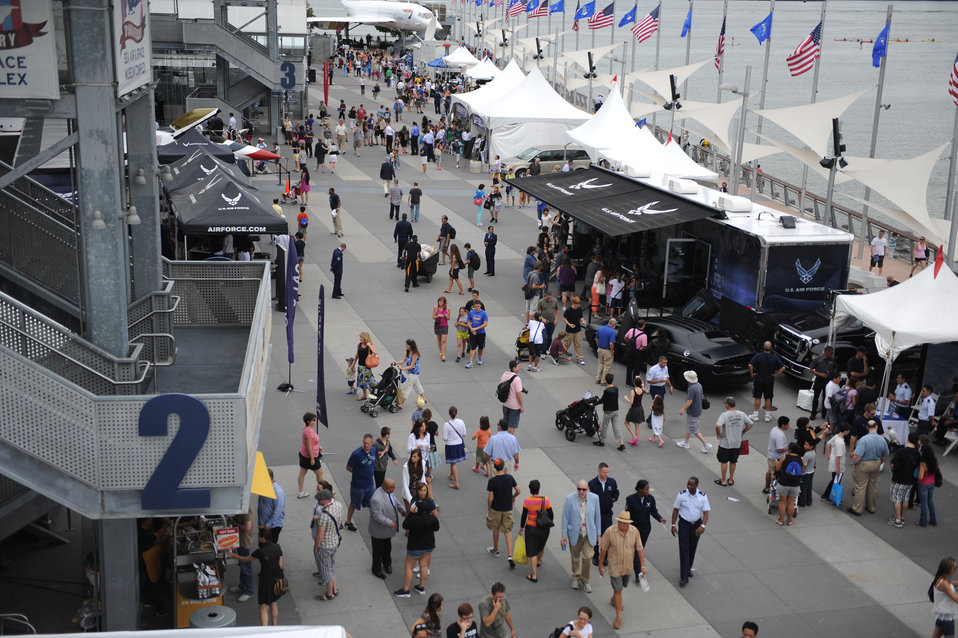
Opening ceremony

Attendees of Air Force Week 2012 walk around and look at the available events on Pier 86 in New York City on Aug. 19.